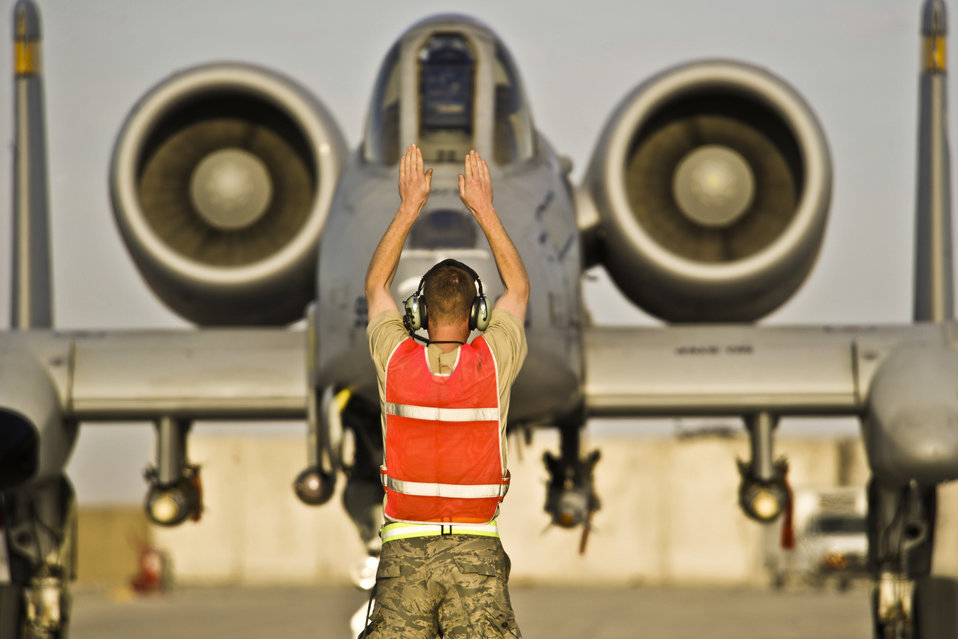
A-10s at Kandahar

An A-10 Thunderbolt II from the 354th Expeditionary Fighter Squadron prepares to depart Kandahar Airfield, Afghanistan, Dec. 27, 2009.